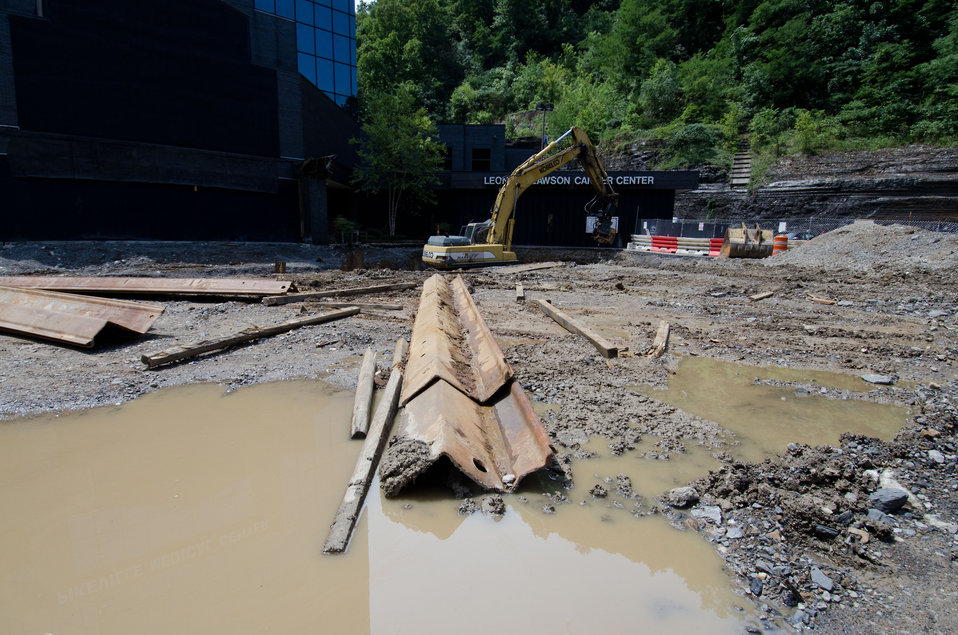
Above ground construction phase of Pikeville Medical Center (PMC) expansion project, on Tuesday, July 12, 2011, in Pikeville, KY. After months of infrastructure construction and rain delays, one of Kentucky’s largest American Recovery and Reinvestment Act (ARRA) projects is under way. The $44.6 million Community Facilities Loan will finance construction of a new medical office building and parking garage.